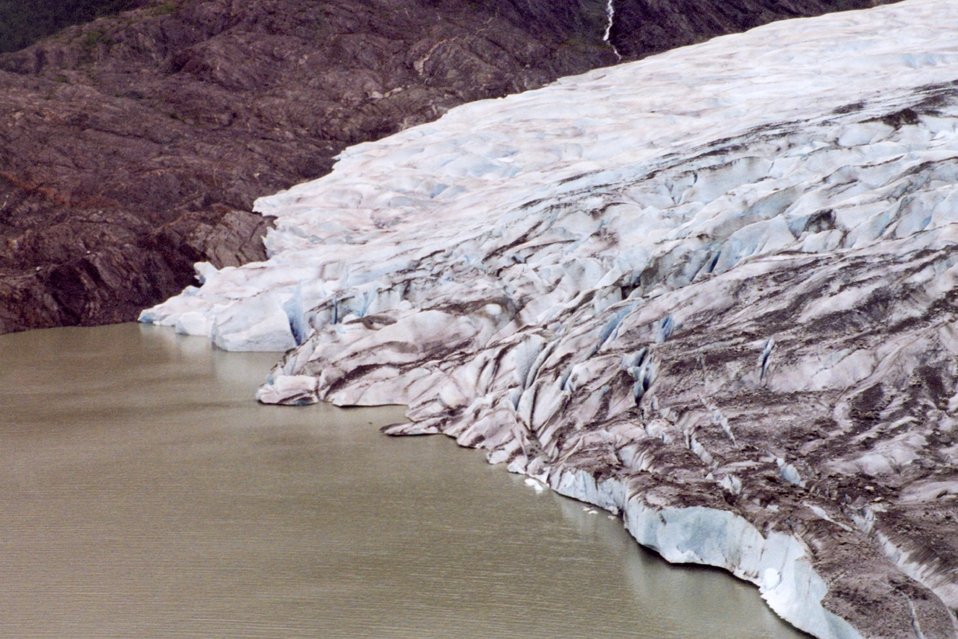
Mendenhall Glacier